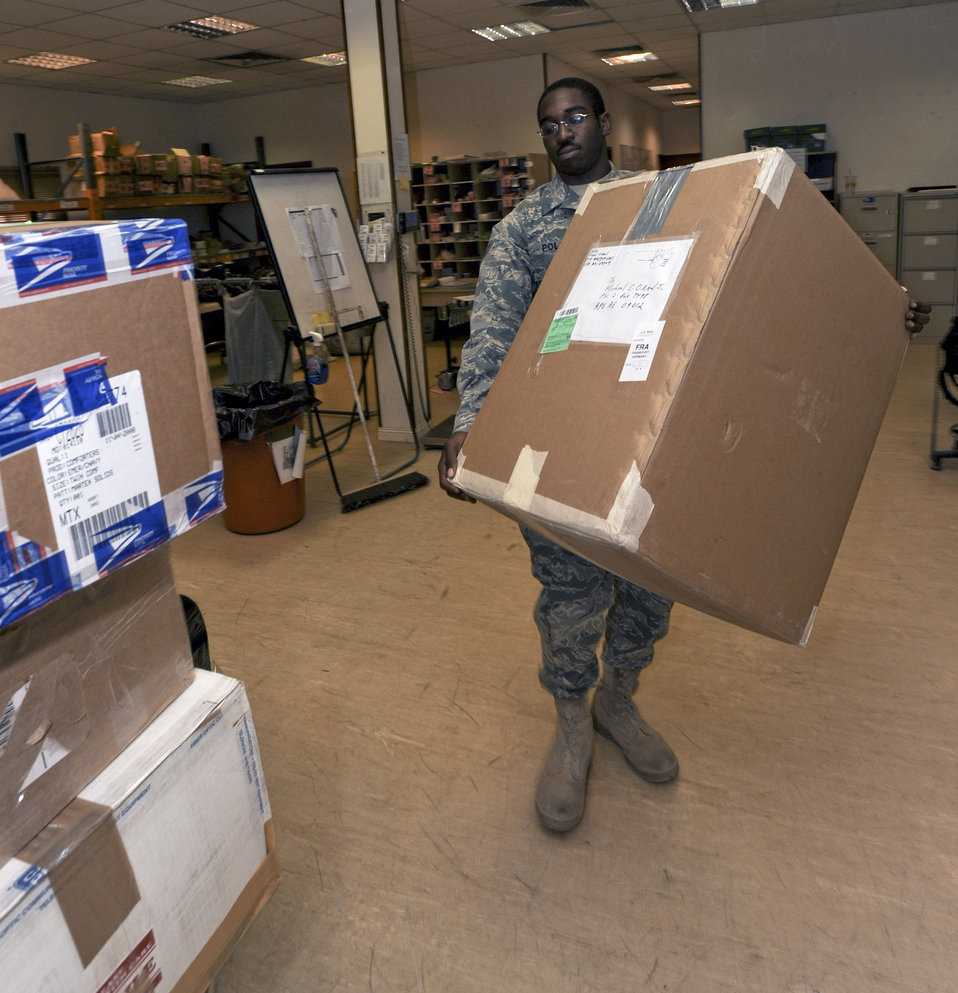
Postal workers deliver pieces of home through mail

Airman 1st Class Cardell Polk stages packages to be picked up later in the day here, April 20 at an air base in Southwest Asia. Throughout the day outgoing mail is prepped for transport to the airport for further delivery. Airman Polk is native to New Orleans and is deployed from Pope Air Force Base, N.C. He is a postal clerk with the 379th Expeditionary Communication Squadron.